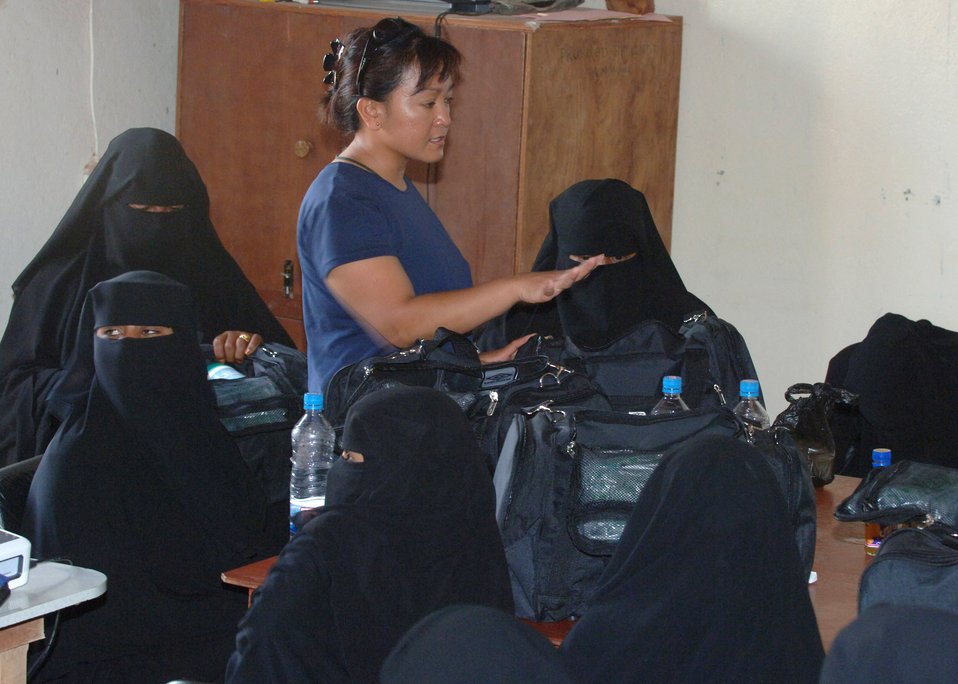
Veterinary project has big impact on small island

Air Force Maj. Pauline Lucas explains the contents of a veterinary bag as part of a Combined Joint Task Force-Horn of Africa veterinary civic action project on the island of Socotra, Yemen. The objective of the project was to teach women on the island basic animal husbandry techniques. Those learned skills will be used to improve the country's overall livestock health and productivity, as well as educate others villagers. Major Lucas is a CJTF-HOA public health officer.